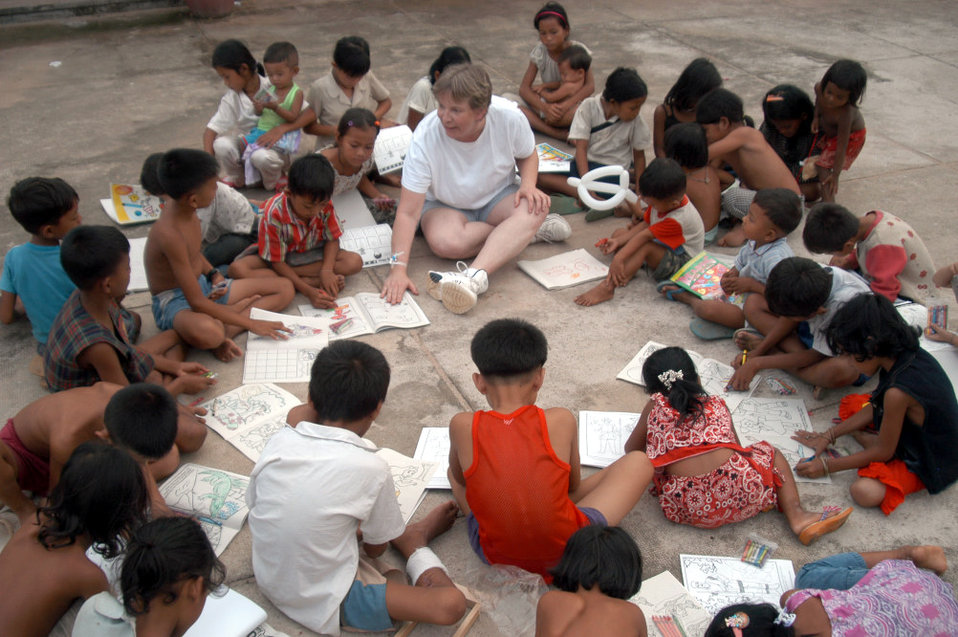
Coloring in Cambodia

KEP, Cambodia -- Master Sgt. Rita Greiner leads a coloring book session with Cambodian children in a hospital compound here May 21. Sergeant Greiner is an orthopedics technician and is part of a 20-person blast resuscitation and victim assistance team. She is assigned to the 99th Medical Operations Squadron at Nellis Air Force Base, Nev.